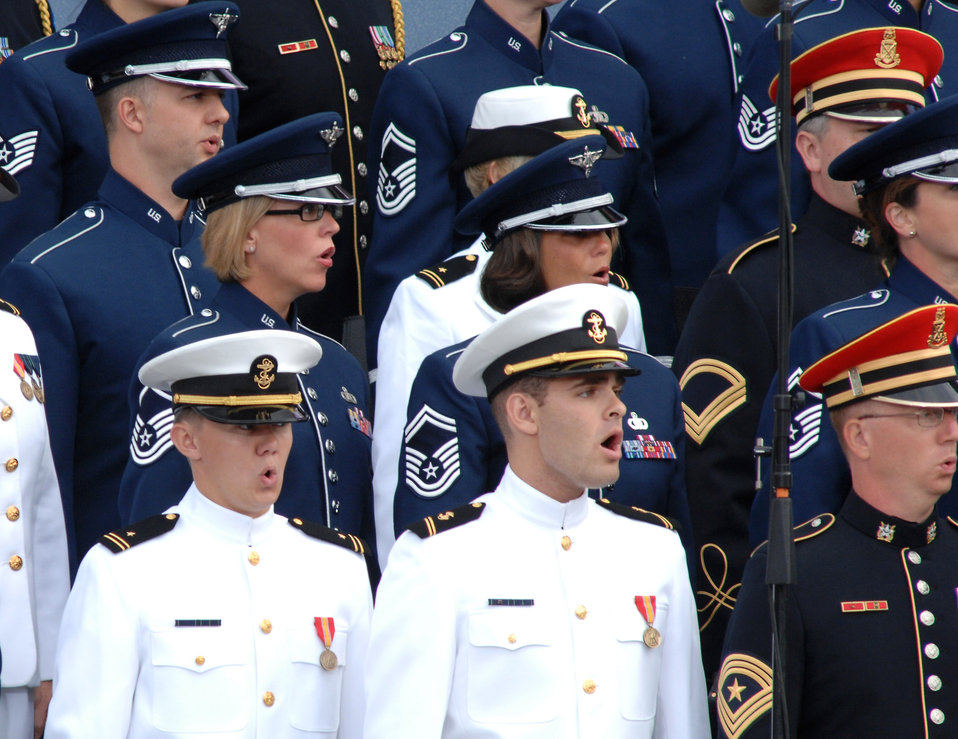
Pentagon Memorial dedication

Representatives of all the services' choruses perform at the Pentagon Memorial dedication ceremony Sept. 11. The national memorial is the first to be dedicated to those killed at the Pentagon on Sept. 11, 2001.